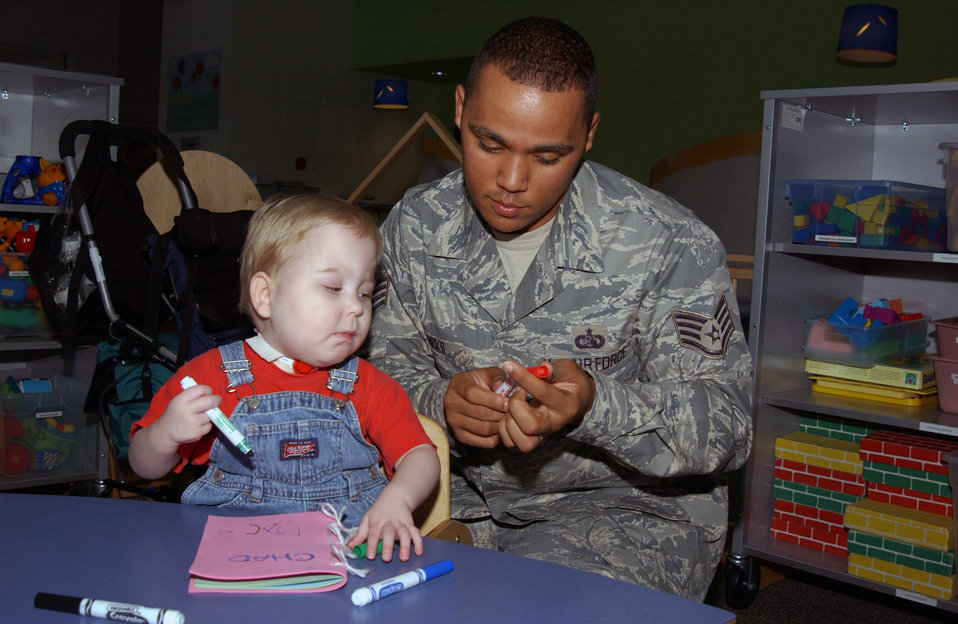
Volunteer program aims to go Air Force wide

Staff Sgt. Jewell Hicks Jr. helps Chad, a patient at a pediatrics specialty hospital in St. Louis, Mo., create a book about what motivates him during an Airmen for Children visit. Sergeant Hicks began Airmen for Children, a volunteer project that enables Airmen from nearby Scott Air Force Base, Ill., to spend time with children at the hospital. During the visit, Airmen playing with the children add non-medicinal healing to the children's stay in the hospital. Sergeant Hicks is an executive communications support Airman with the 375th Communications Squadron at Scott AFB.